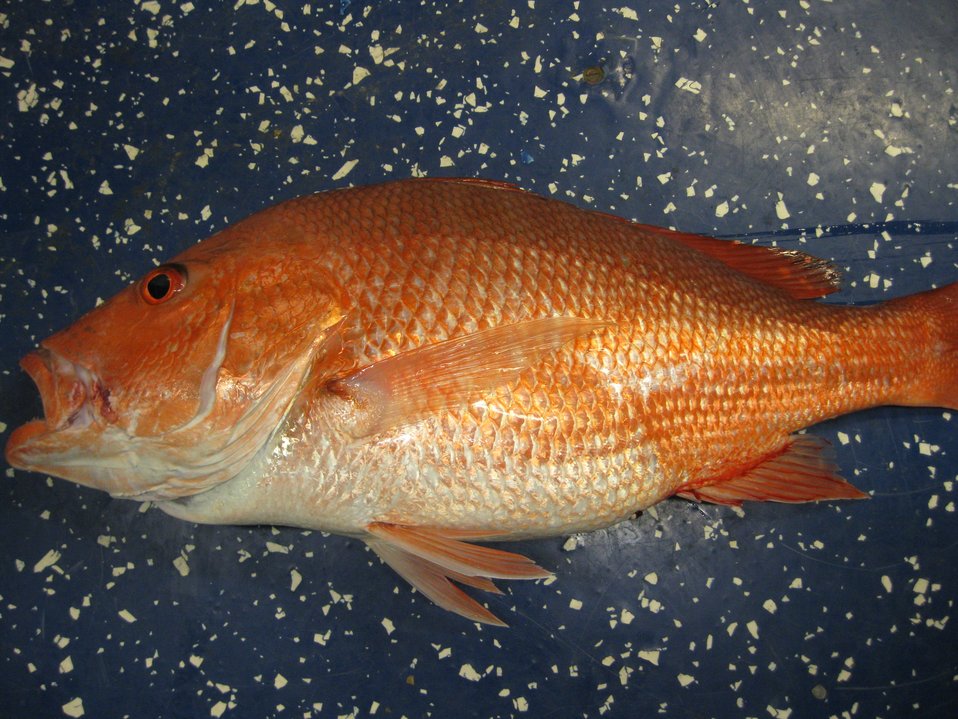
Red snapper (Lutjanus campechanus)